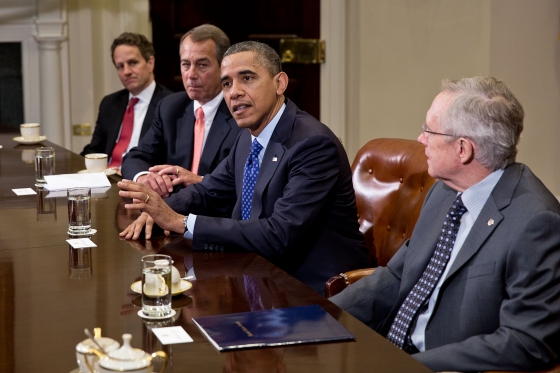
White House meeting with Congressional leaders

Secretary Geithner participates in a meeting at the White House with Congressional leadership to discuss the fiscal cliff and a balanced approach to the debt limit and deficit reduction, in the Roosevelt Room of the White House, Nov. 16, 2012. Participants included: House Speaker John Boehner at left, Senate Majority Leader Harry Reid at right, Senate Minority Leader Mitch McConnell, House Minority Leader Nancy Pelosi, Chief of Staff Jack Lew, and National Economic Council Director Gene Sperling.